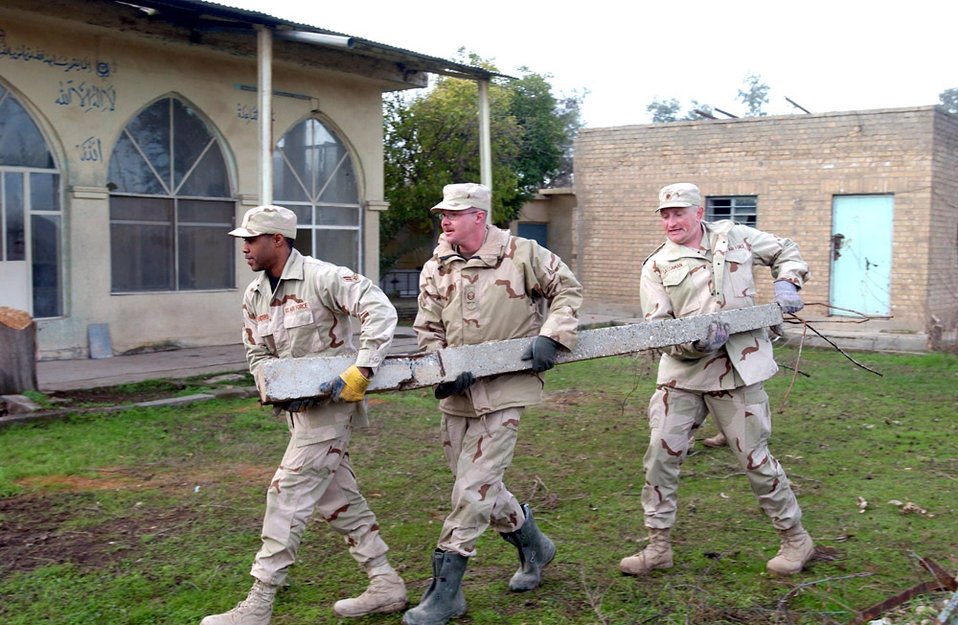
Airmen restoring mosque

KIRKUK AIR BASE, Iraq -- Airmen remove a concrete pillar during the Jan. 11 cleanup effort to help restore a mosque here. Project volunteers represent several 506th Air Expeditionary Group units here.